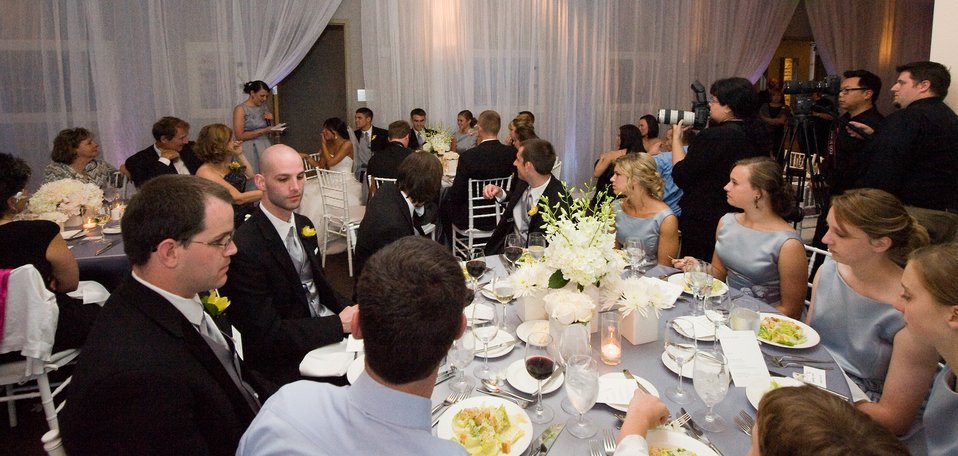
San Francisco Dream Wedding

Amie Muza Teskey makes a speech and a toast in honor of Vanessa and Capt. Mike Hawkins' following their wedding on May 14, 2010, in San Fransciso. Ms. Teskey is the maid of honor and sister of Vanessa. The wedding couple won the San Francisco Dream Wedding Giveaway with internet viewer votes. Vanessa was diagnosed with stage IV Hodgkin's Lymphoma. Vendors donated $100,000 of goods and services to the couples wedding day.